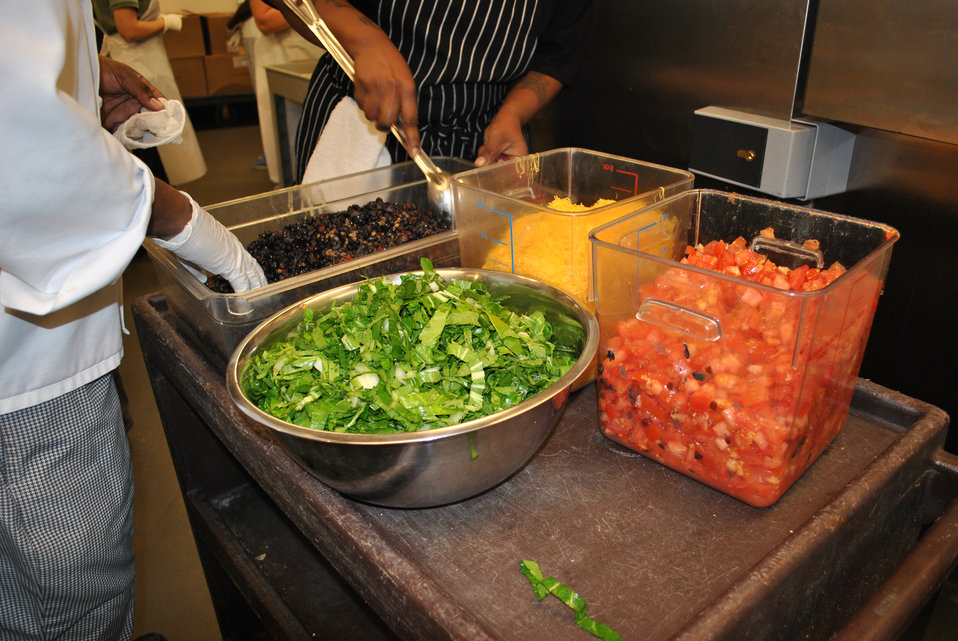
U.S. Department of Agriculture (USDA) volunteers prepare all of the ingredients for bean burritos at the DC Central Kitchen. The ingredients for the bean burritos includes shredded mild cheddar cheese, diced tomatoes, chopped bok choy, mashed lentils and black beans. The bok choy was grown in the USDA headquarters Peoples Garden and donated to DC Central Kitchen.